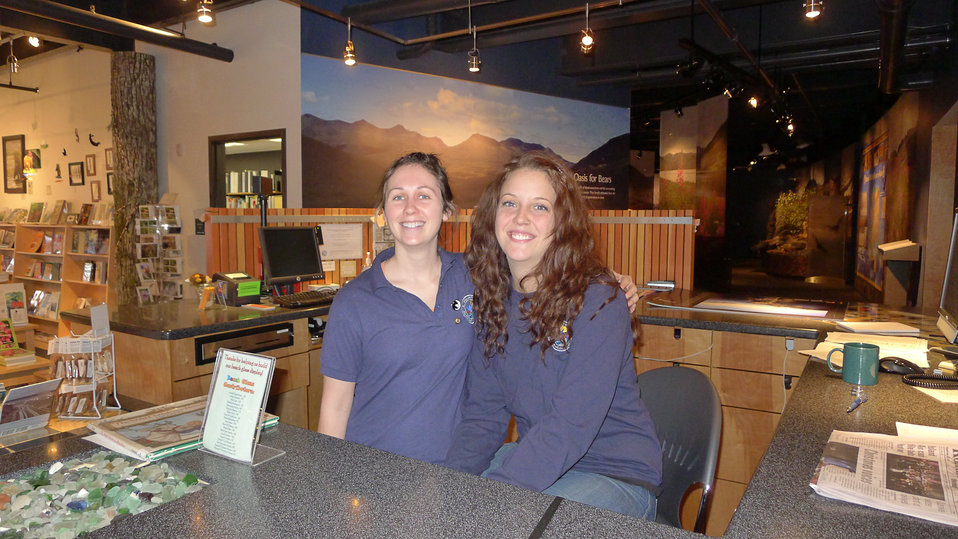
Volunteers at the information desk of Kodiak Refuge Visitor Center

Photo Credit: Lisa Hupp/USFWS
Source: Kodiak NWR